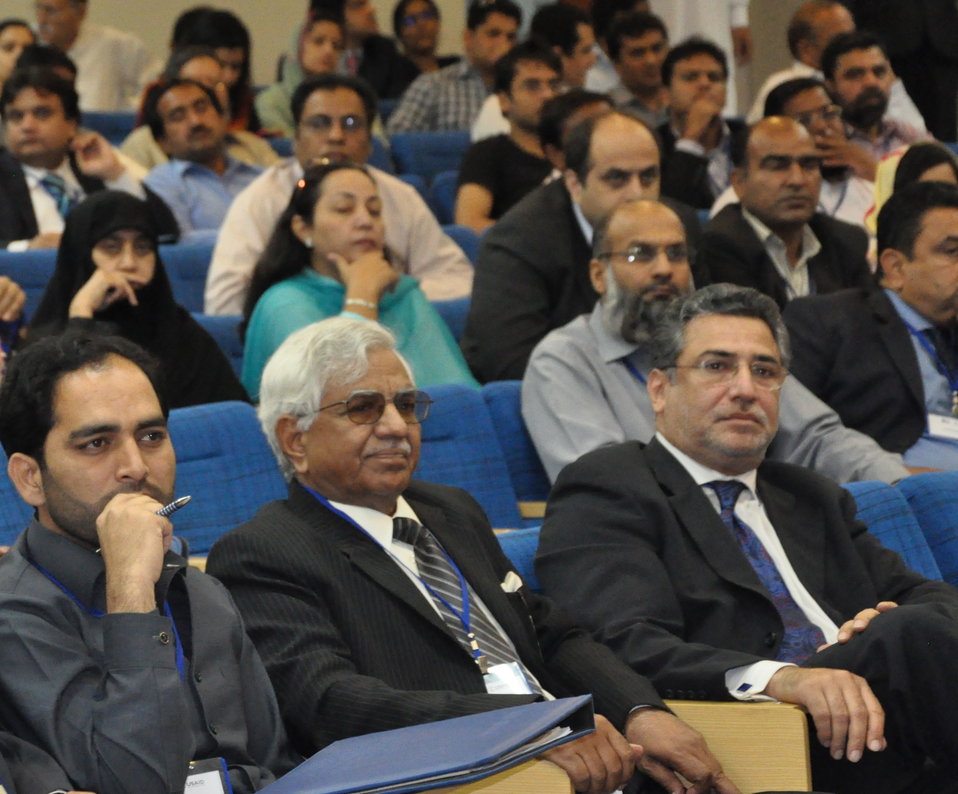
Front row extreme right: Former Punjab Education Minister Mian Imran Masud at the conference